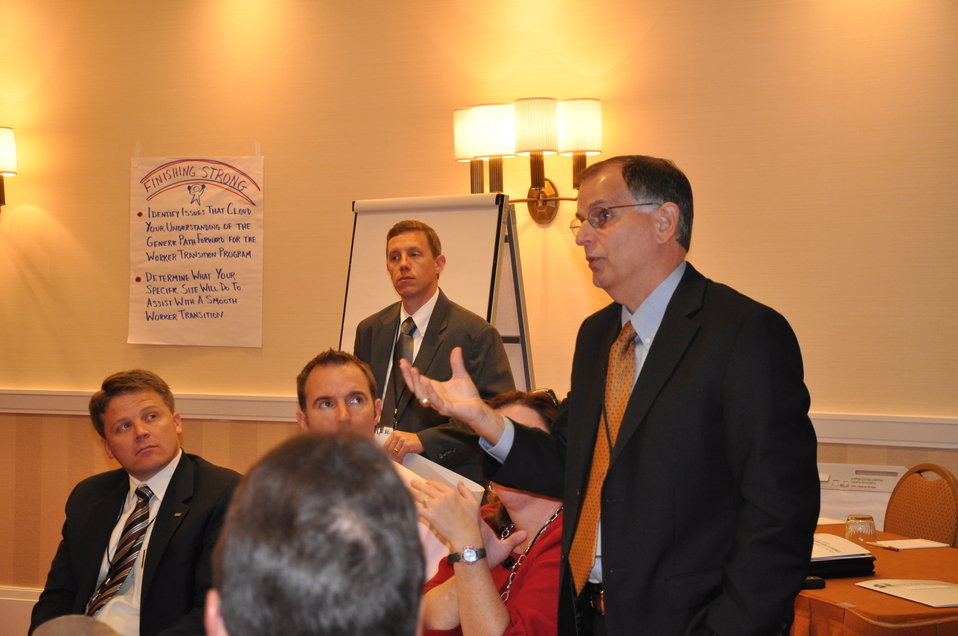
Information Exchange Breakout Session

Information Exchange attendees discuss workforce transition plans for Recovery Act sites in a breakout session.

The Information Exchange provided a platform for valuable communication among Recovery Act colleagues across the nation, as information streamed back and forth between EM headquarters and the Recovery Act sites.